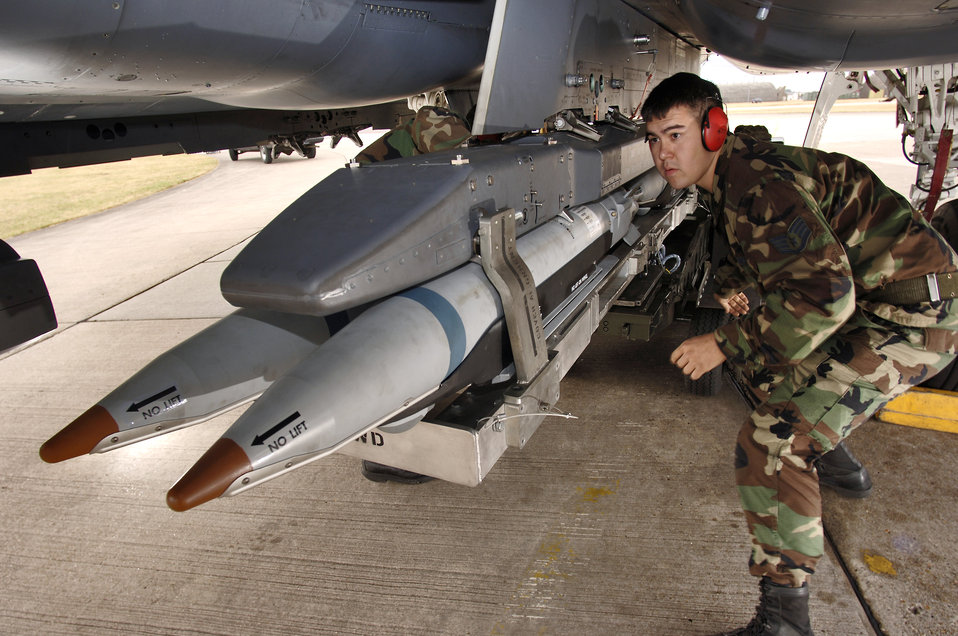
Small-diameter bomb makes Strike Eagle squadron more lethal

Staff Sgt. Randy Broome signals a jammer operator to move a Bomb Rack Unit 61 forward, while loading it onto an F-15E Strike Eagle at Royal Air Force Lakenheath, England, on Aug. 1. The NCO is an aircraft weapons specialist with the 48th Aircraft Maintenance Squadron.